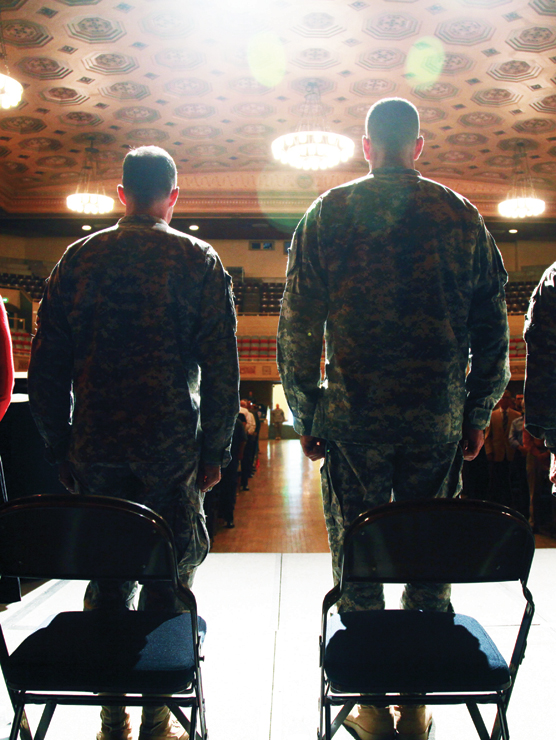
Changing of the Guard

Col. Thomas C. Chapman (left) and Col. William J. Leady stand on stage during their change of command ceremony at the Sacramento Memorial Auditorium in Sacramento, Calif. July 27.